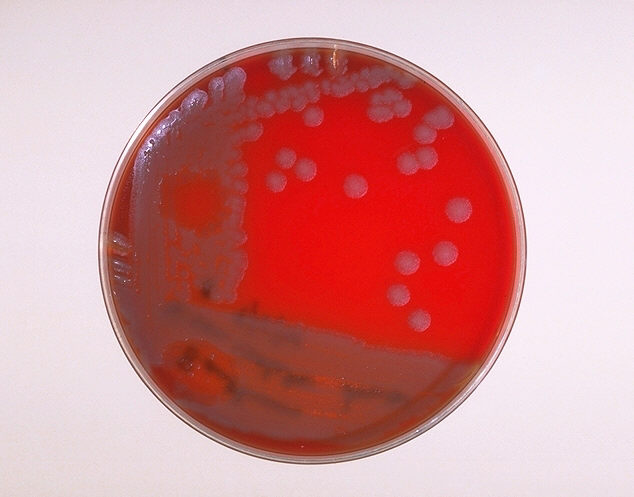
Blood agar plate culture of Bacillus anthracis.